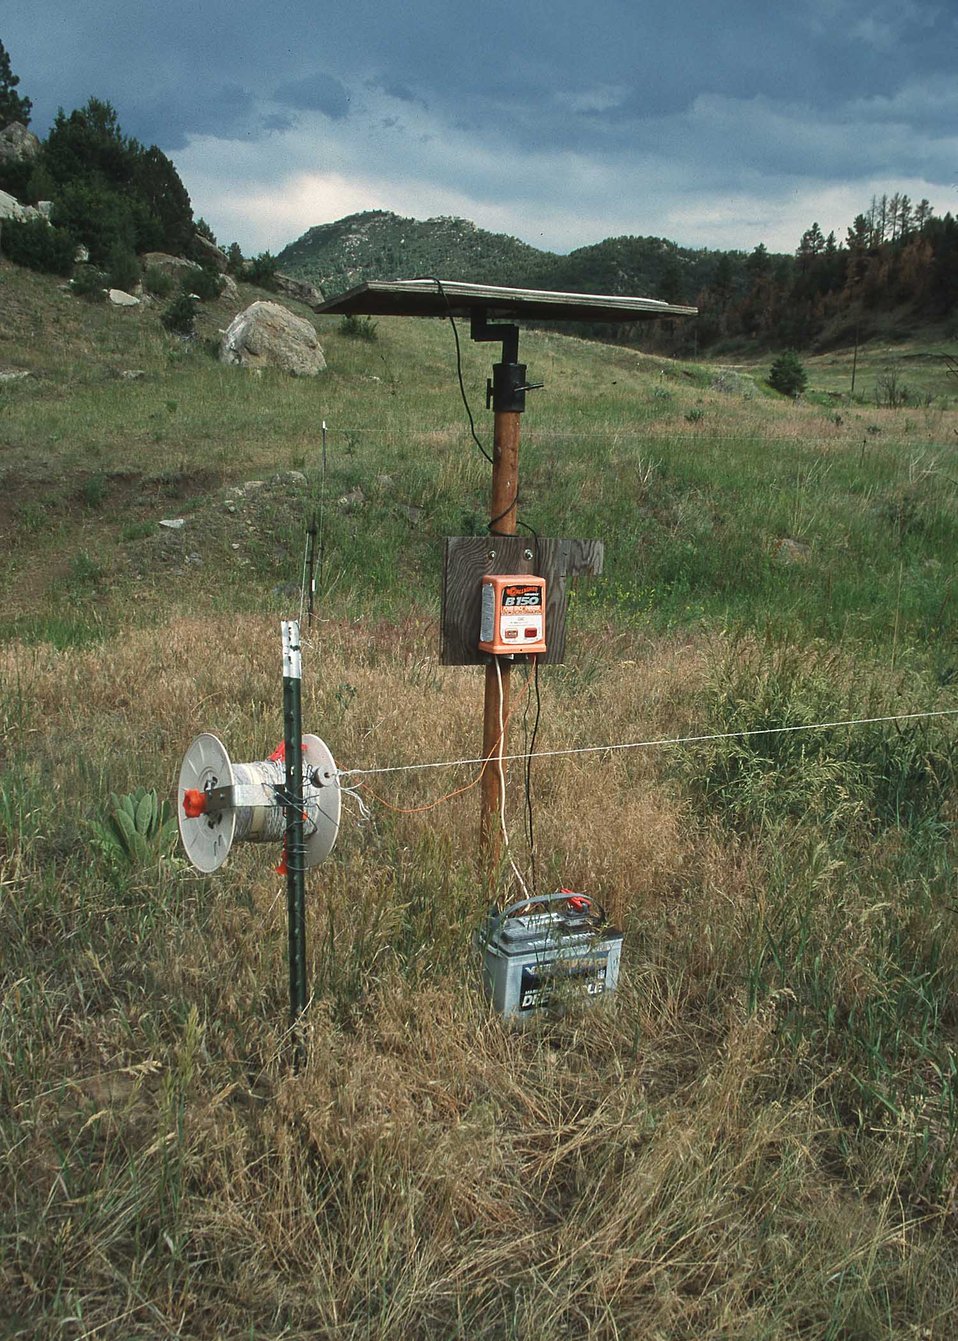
Electric Fence Energizer.